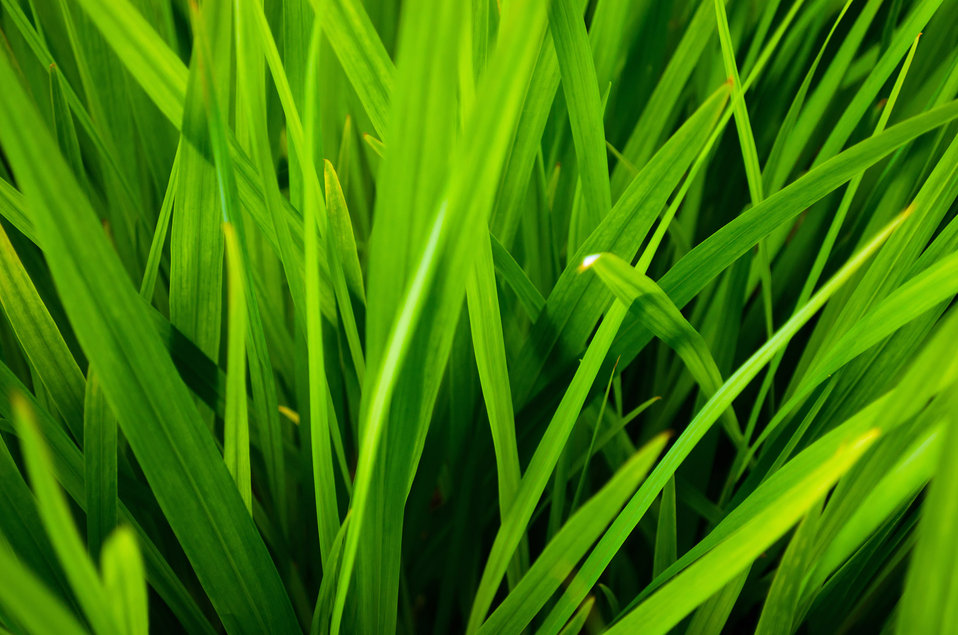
Grass - macro.